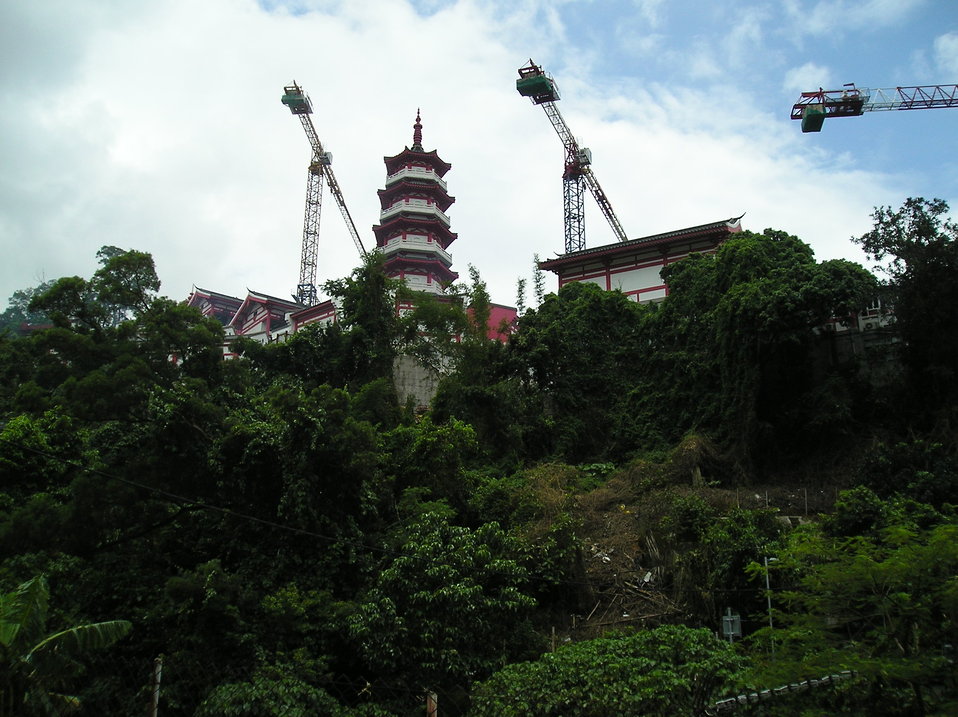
1000 Buddha Temple main view